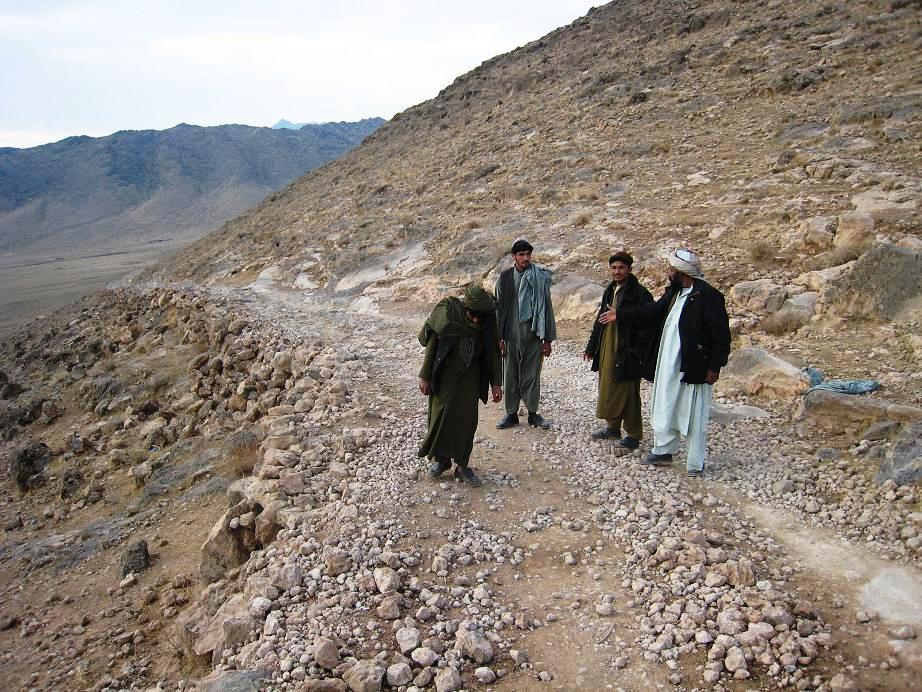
assessing project